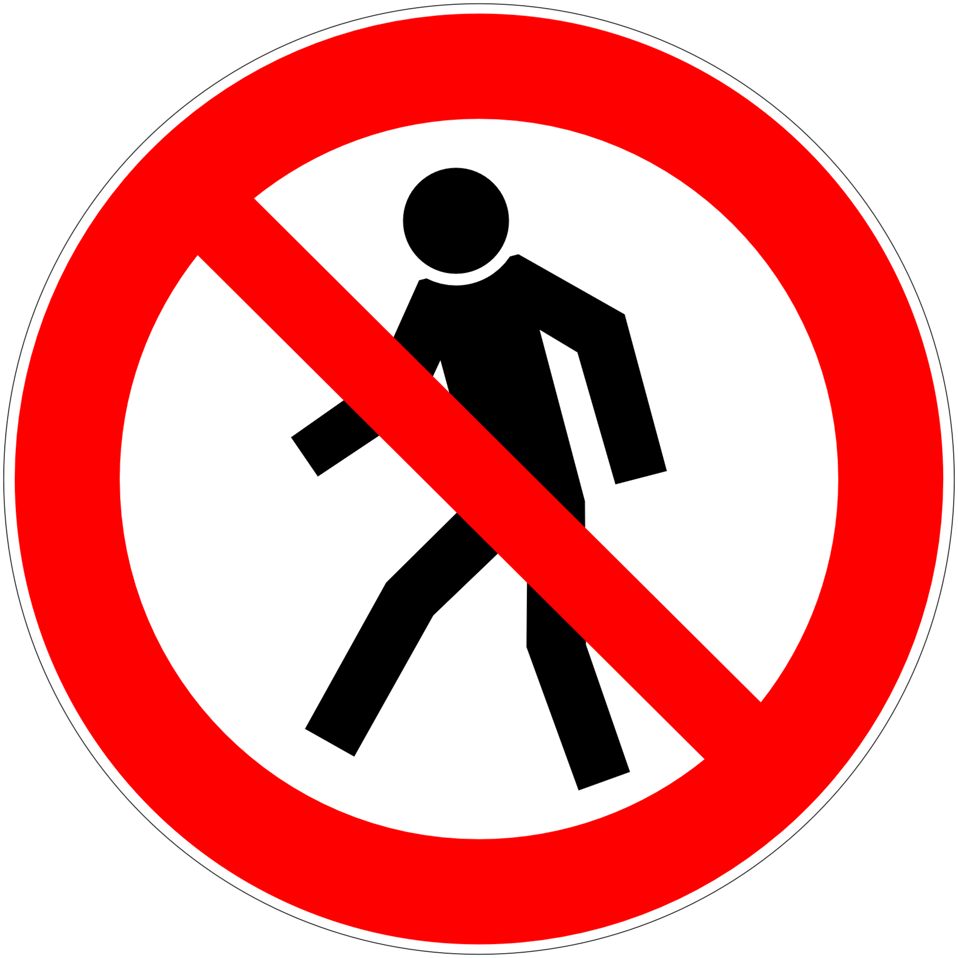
Deutsch: Für Fußgänger verboten, Verbotszeichen D-P003 nach DIN 4844-2 No pedestrians, prohibition symbol D-P003 according to German standard DIN 4844-2